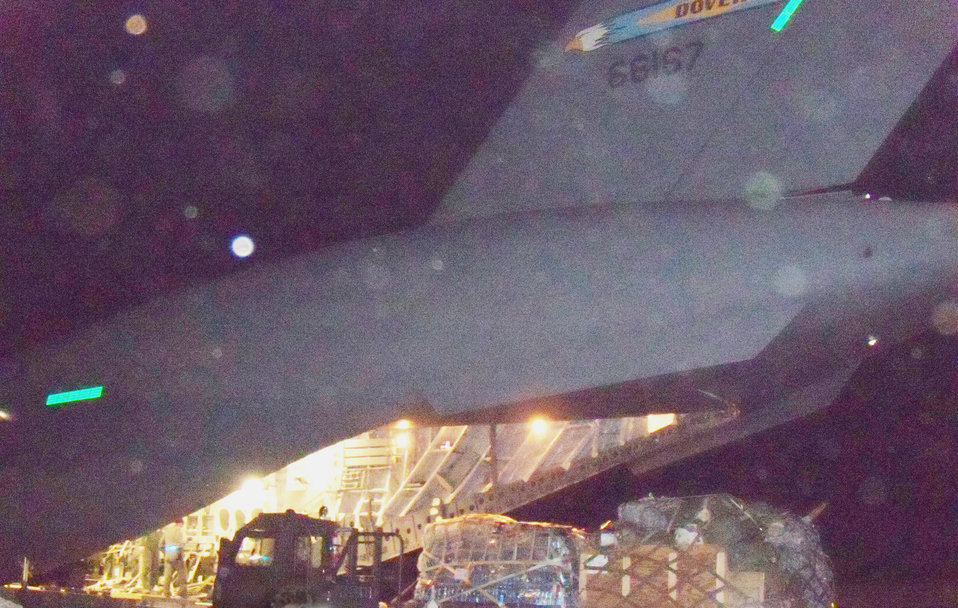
Operation Unified Response

A C-17 Globemaster III crew from the 3rd Airlift Squadron at Dover Air Force Base, Del., drops off 90,000 pounds of disaster relief aid at the Port-au-Prince airport in Haiti on Jan. 19, 2010, in support of Operation Unified Response. After unloading the cargo, 36 evacuees boarded the aircraft which flew them to the U.S.